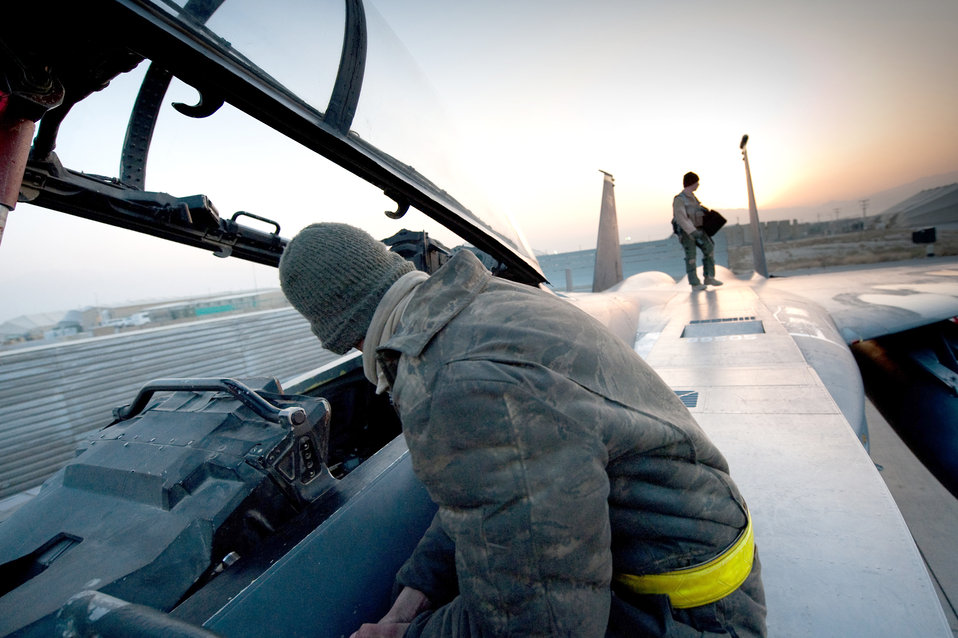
Mission preparation at Bagram

Airmen prepare an F-15E Strike Eagle for takeoff Jan. 4, 2011, at Bagram Airfield, Afghanistan. They are deployed from Seymour Johnson Air Force Base, N.C.